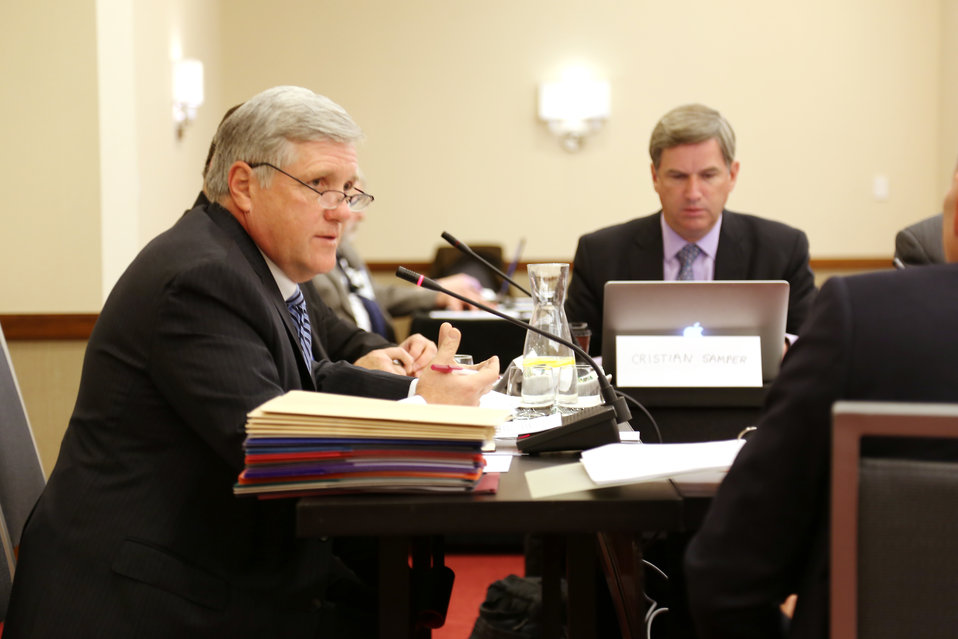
Wildlife Trafficking Advisory Council Meeting March 20, 2014